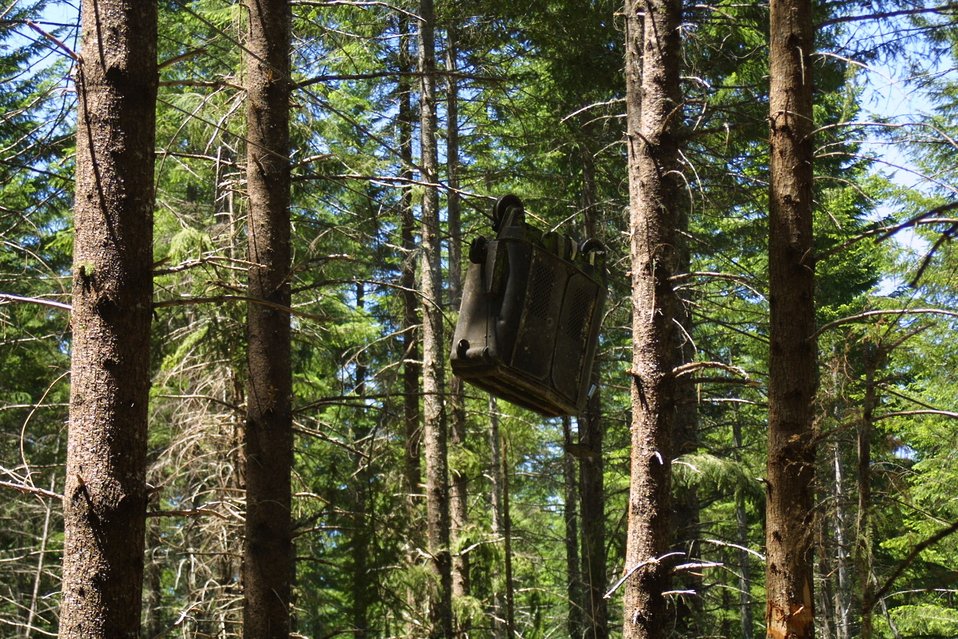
Camas East Timber Sale in Late Successional Reserve.